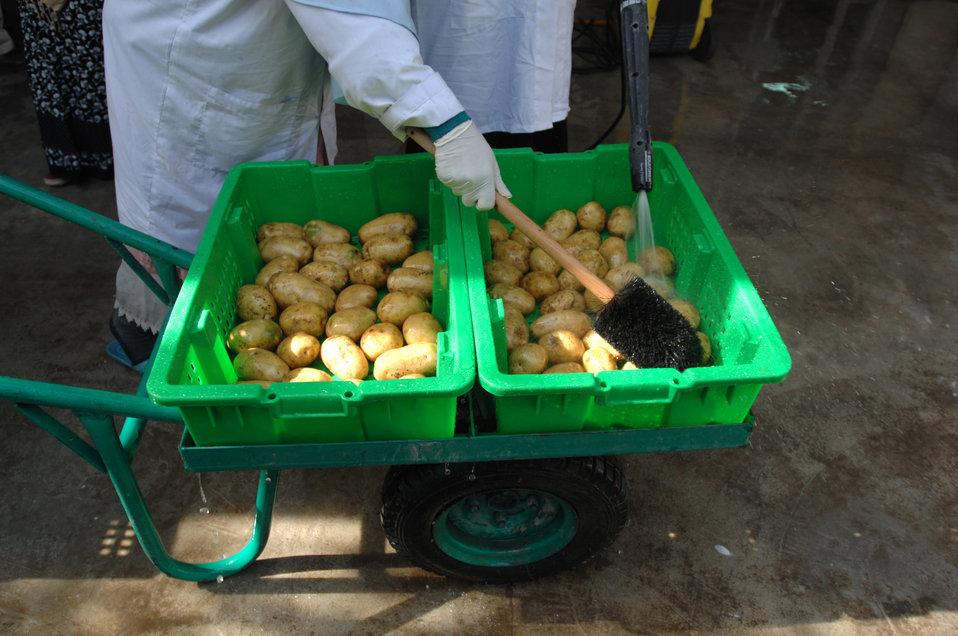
Shah

Potatoes get their first wash at the Surkh Rod vegetable packing facility in Nangarhar province on Wednesday, February 9, 2011. (S.K. Vemmer/Department of State)